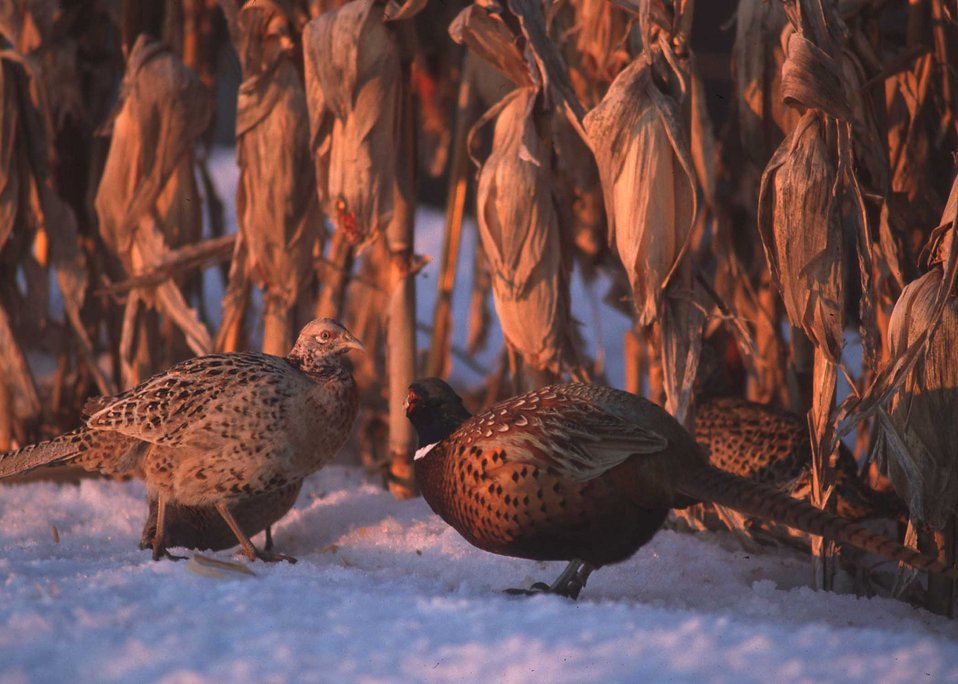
Pheasants and other wildlife species need both food and cover in harsh Iowa winters. It is provided by landowners with both annual and perennial plantings.